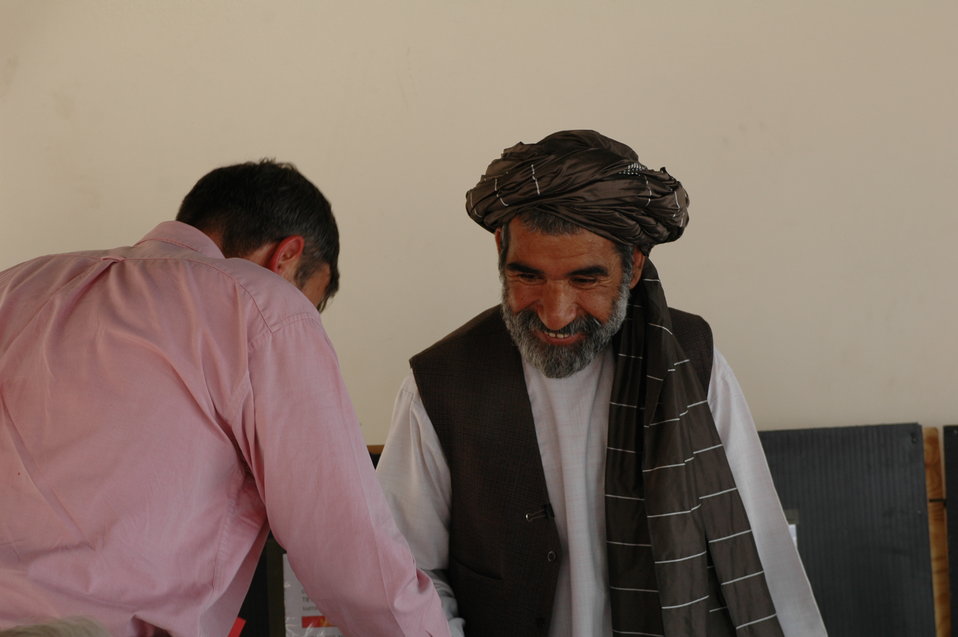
CODEL Berman